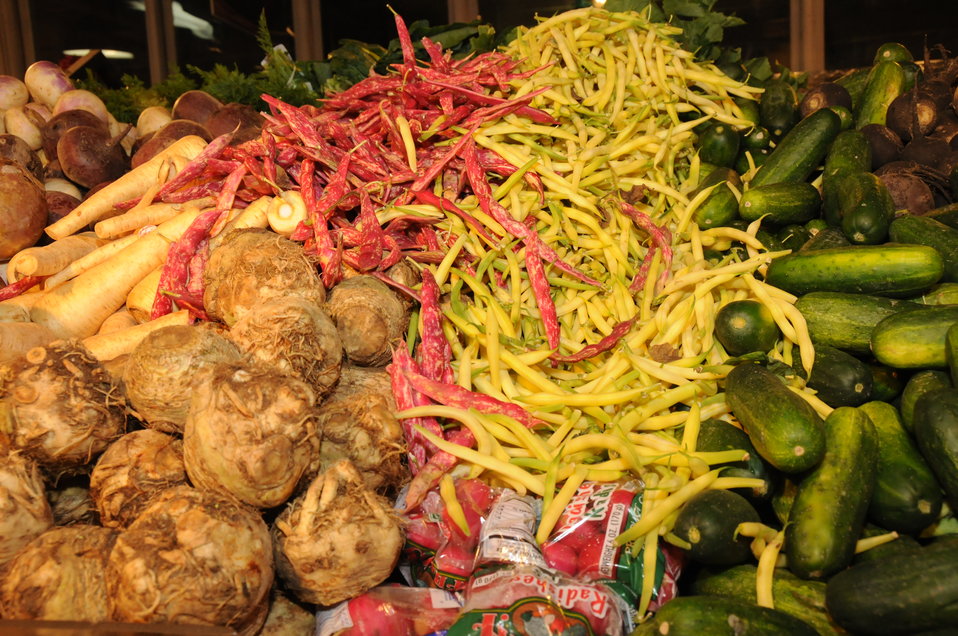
The Reading Terminal Market offers produce fresh from the field to the people of Philadelphia, PA on April 3, 2009. There are Amish specialties, fruits, vegetables, meats, seafood, and poultry. Reading Terminal Market opened for business in 1892 with approximately 78,000 square feet and almost 800 spaces for vendors. The Market was revitalized in the 1990’s and today is still the gastronomic bazaar that its original planners had envisioned. Many of the historic Market stands survived the reconstruction and are once again filled with local produce, fresh eggs, milk, meats, poultry, seafood, handmade crafts, jewelry, and clothing. The Market is home to more than 80 merchants, two of whom are descendants of the original stand holders from a century before.